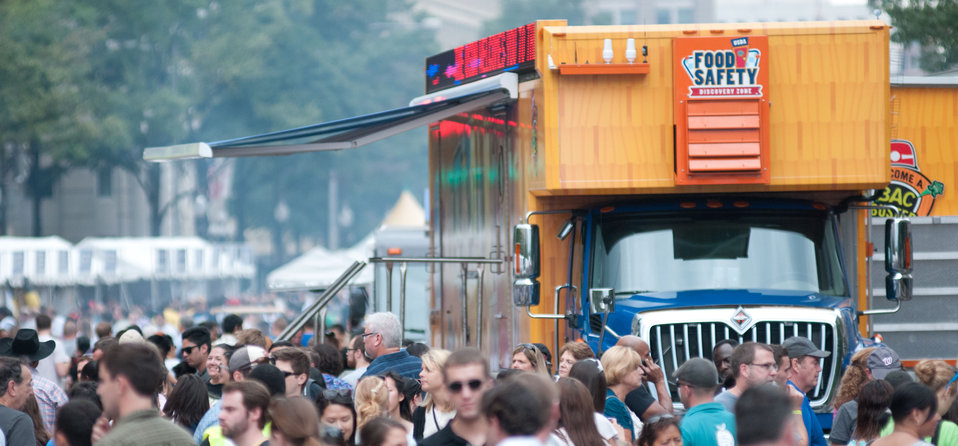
Agriculture’s mobile Discovery Zone is a hands-on vehicle that travels the nation educating children and parents about the four main principals of home food safety – clean, separate, cook and chill, at the Taste of D.C., event that highlights more than 70 eateries, 30 specialty beer providers, the United Service Organization (USO) Metropolitan Washington, and live bands. It is anticipated that more than 500,000 people will attend over the course of the three-day event, which extends from the White House to the Capitol, along Pennsylvania Ave. in Washington D.C. on Saturday, October 6, 2012. Agriculture Food Safety and Inspection Service specialists present talks and cooking demonstrations.